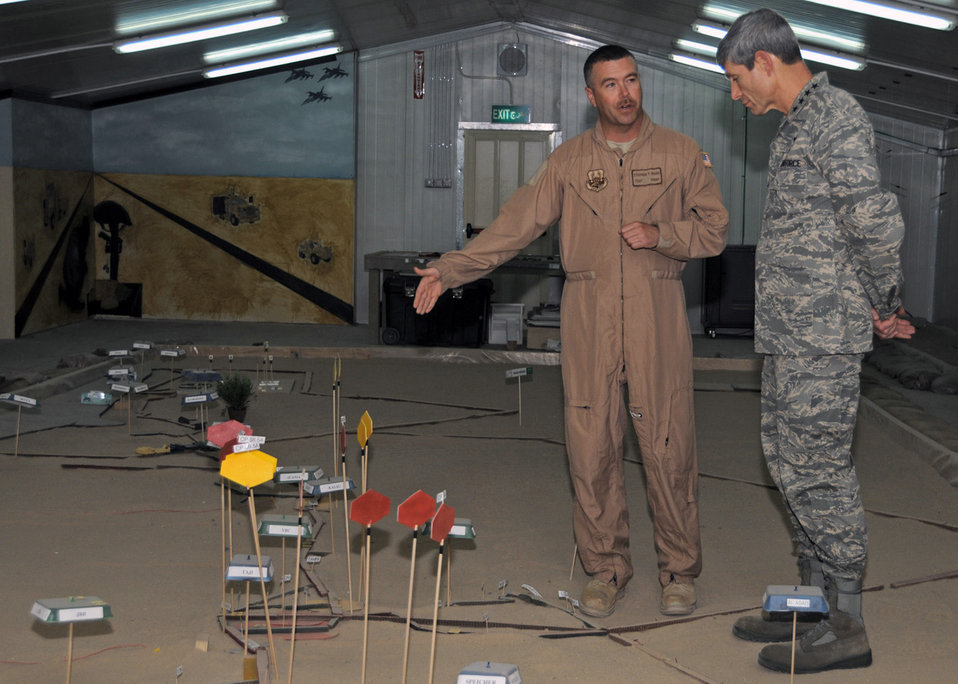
CSAF addresses 386th Airman during AOR visit

Tech. Sgt. Stephen Byard, a 586th Expeditionary Logistics Readiness Squadron convoy commander, uses a sand table demonstration to explain routes and threats line haul truckers face during their missions to Air Force Chief of Staff Gen. Norton Schwartz during his visit April 7 to an Army base in Southwest Asia. The sand table is a realistic, scaled map of convoy routes and high threat areas throughout Iraq. Sergeant Byard is currently deployed from Andrews Air Force base, Md.